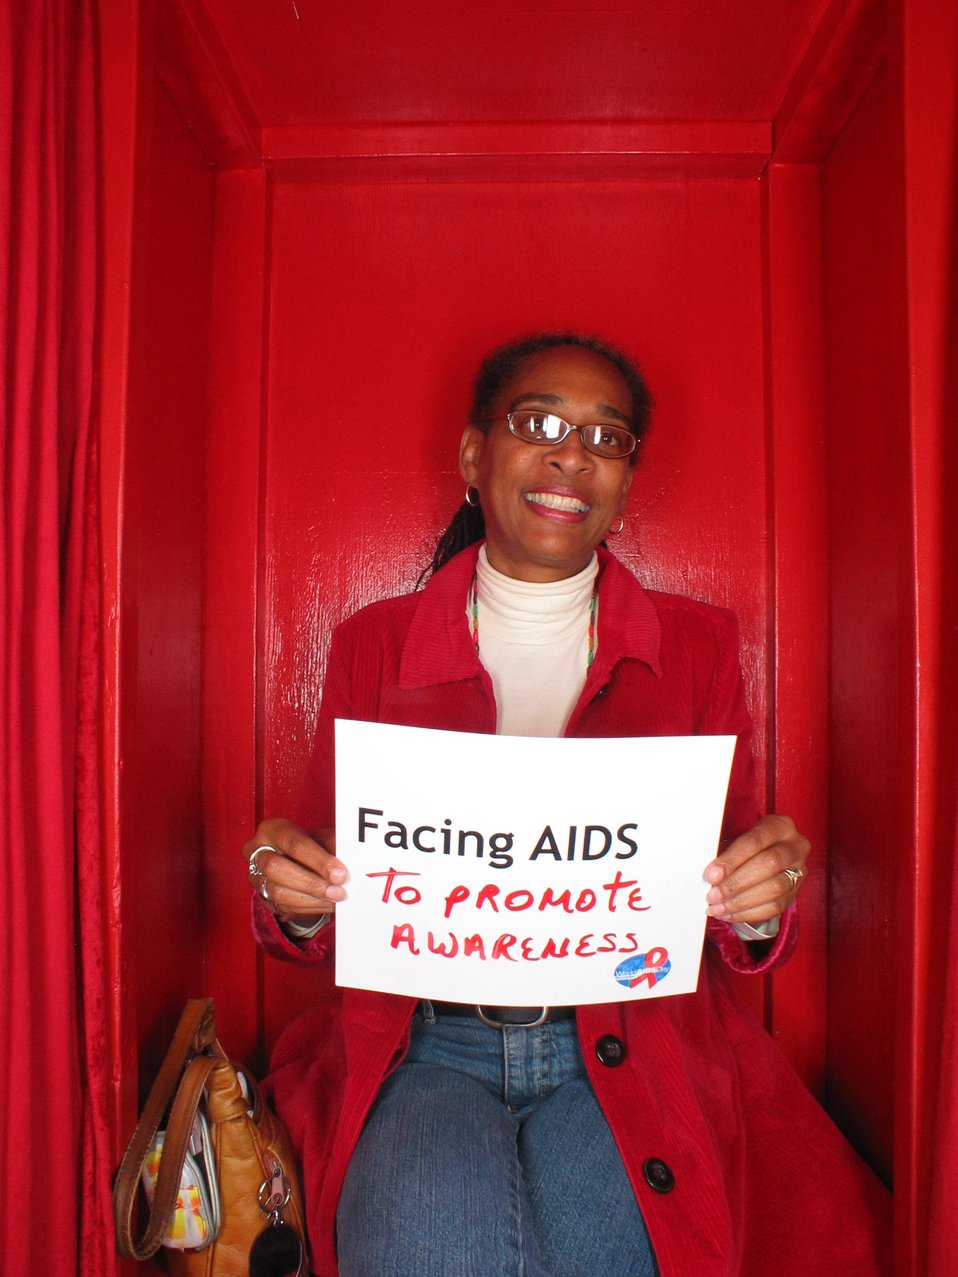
Facing AIDS to promote awareness.